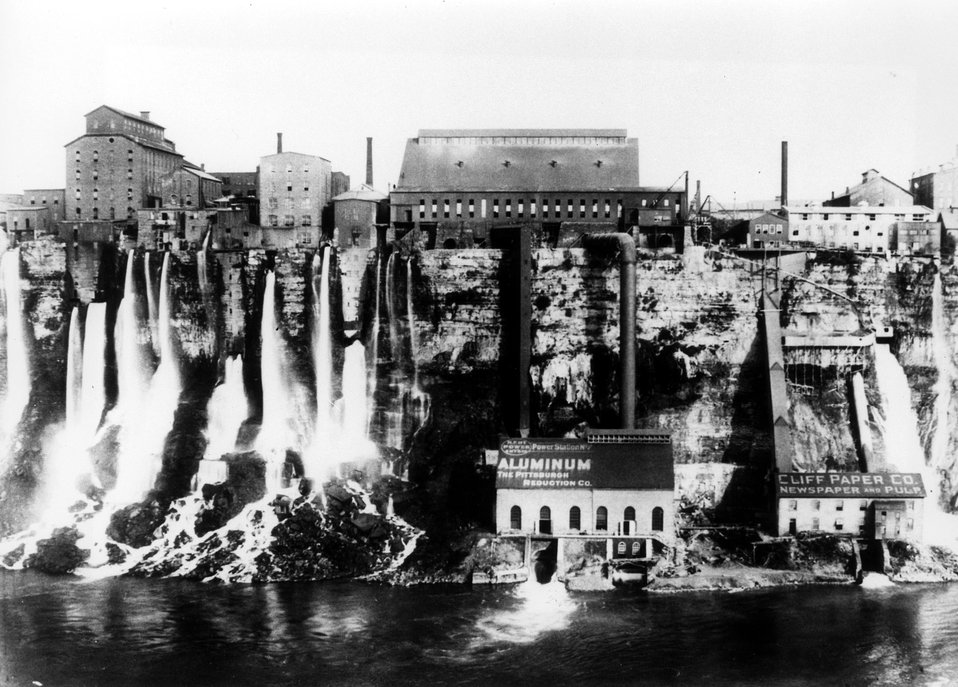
Niagara Falls 1890's.